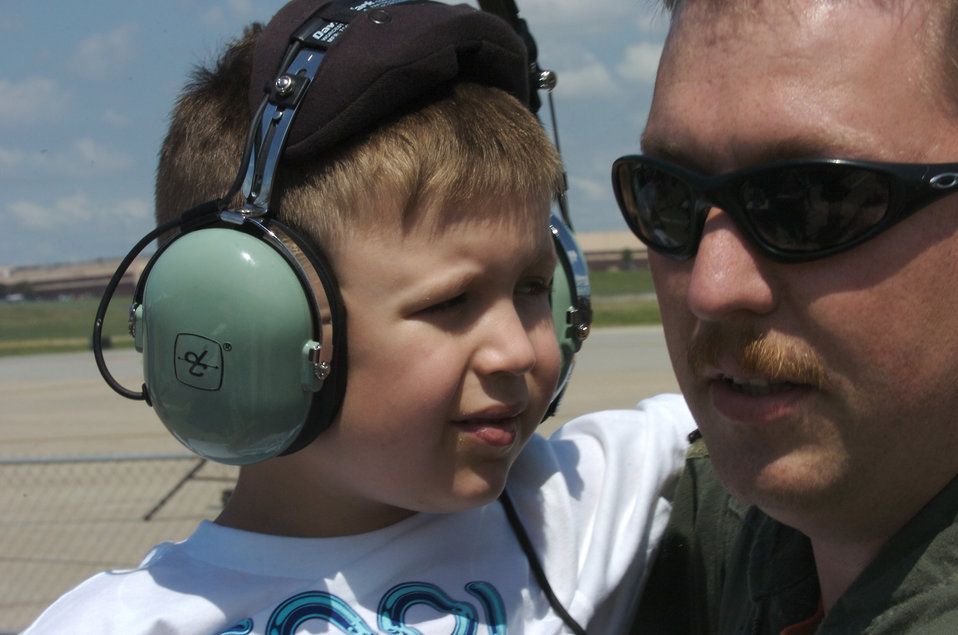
Offutt Airmen hold airshow

Noah and his father, Staff Sgt. Ken Hindman, spend the day at the special needs airshow Aug. 15 at Offutt Air Force Base, Neb. Sergeant Hindman is assigned to the 338th Combat Training Squadron at Offutt AFB.